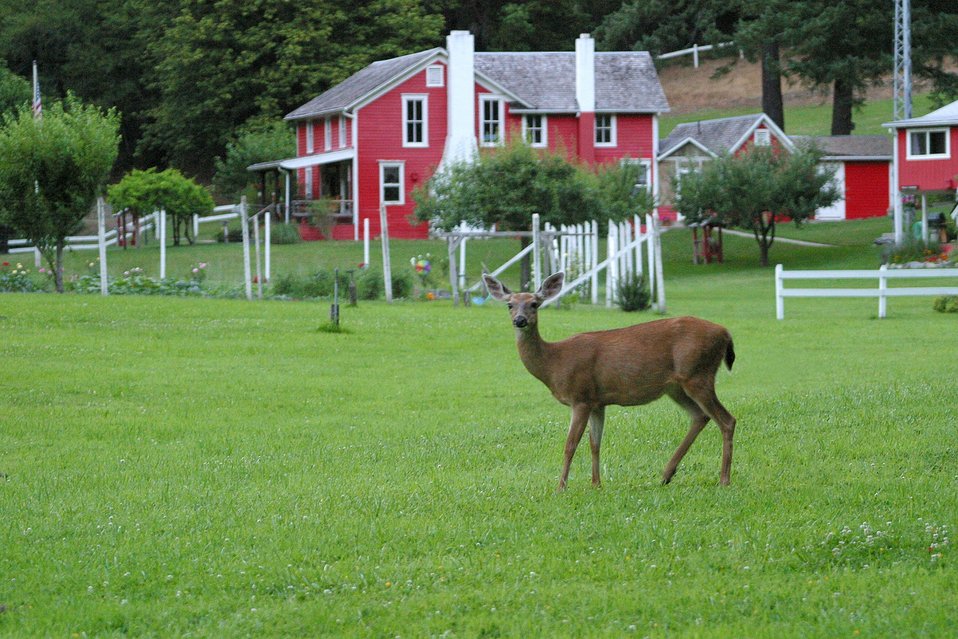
Black tail deer in the meadow at the Rogue River Ranch.